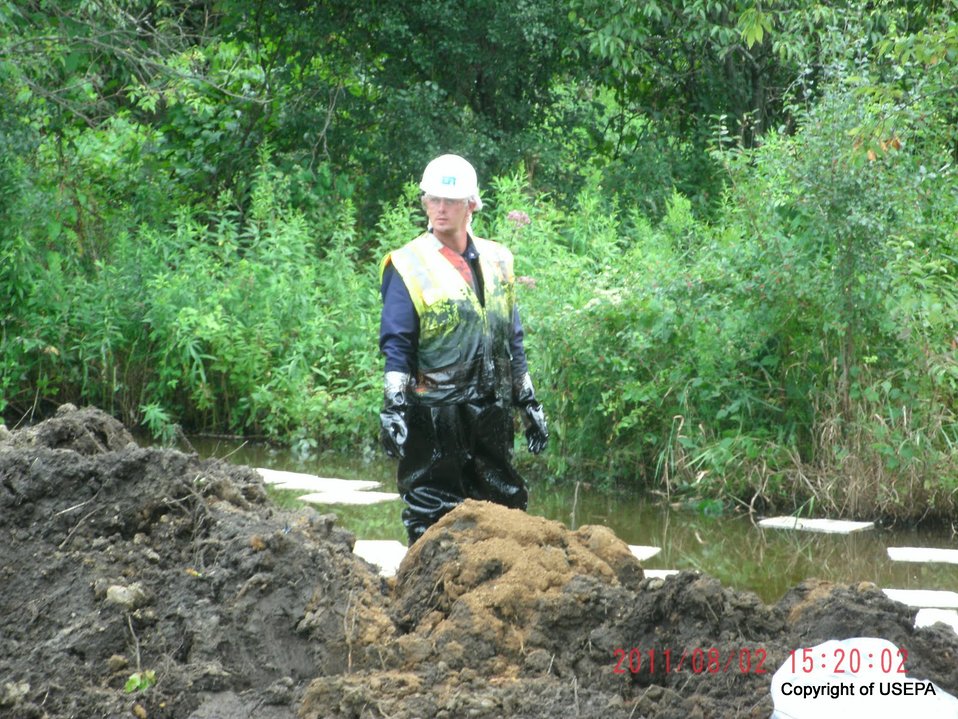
Worker covered in oil

August 2, 2010 - Worker covered in oil works to remove oil among Talmadge Creek vegetation near Marshall, Michigan.